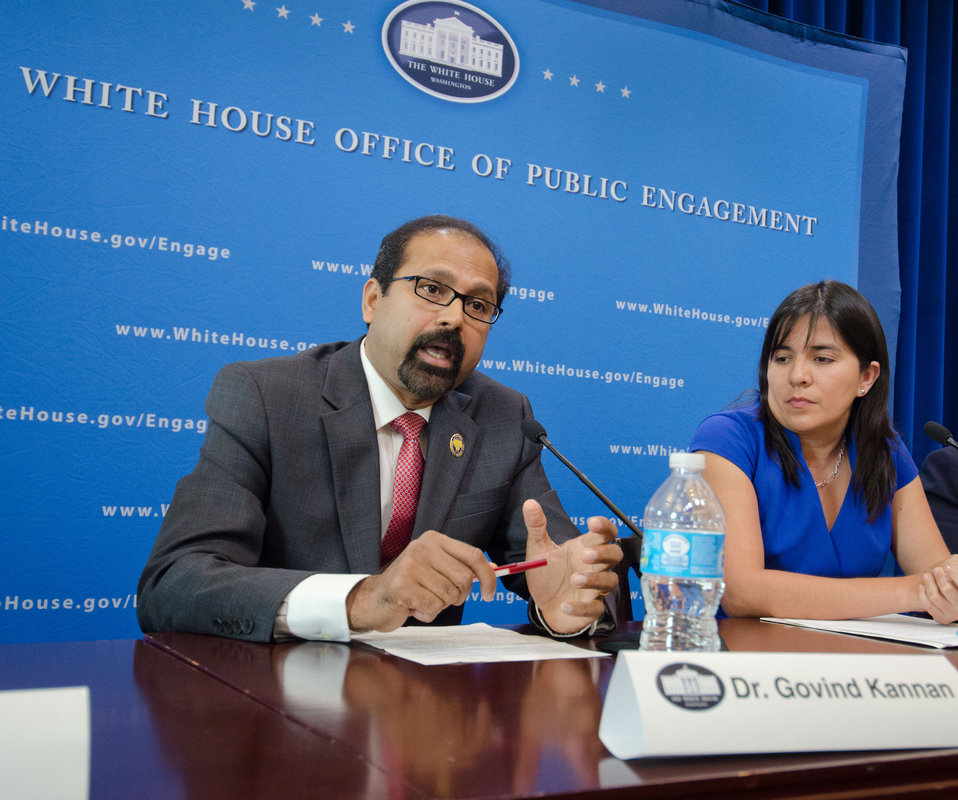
Fort Valley State University (Georgia) College of Agriculture, Family Sciences and Technology Dean and Director Dr. Govind Kannan. is one of eleven honorees recognized for his efforts to reduce hunger and increase food security in the U.S. and internationally at the White House Champions of Change Strengthening Food Security at Home and Abroad Event held at the White House on Thursday, September 6, 2012, in Washington, D.C.